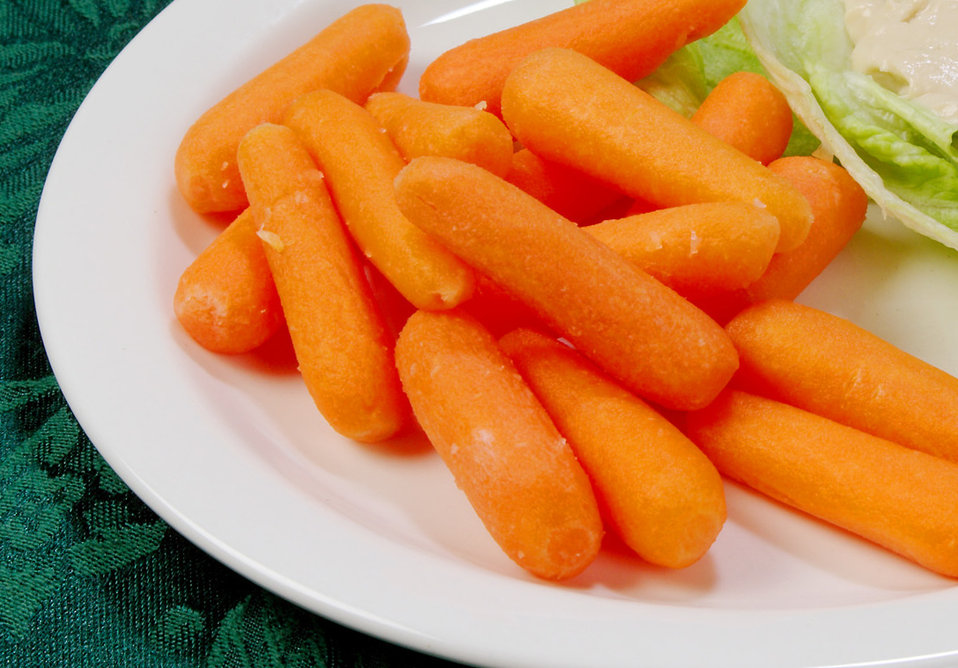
The carrots on this plate are an excellent source of Vitamin A, which is necessary for healthy eyesight, skin, growth, and also aids our bodies in resisting infection, and potassium.